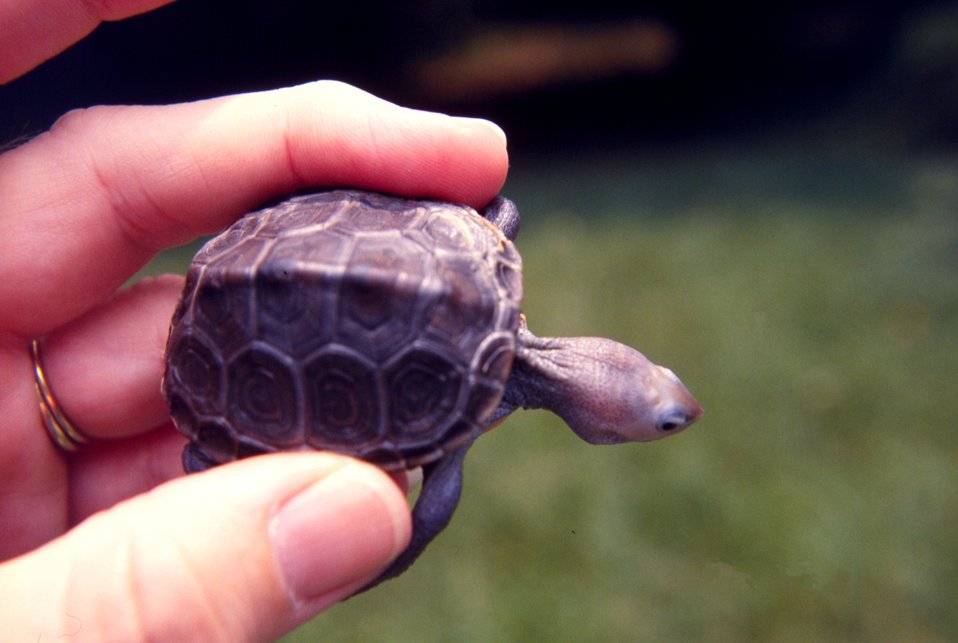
Baby diamondback terrapin, Malachlenys terrapin.